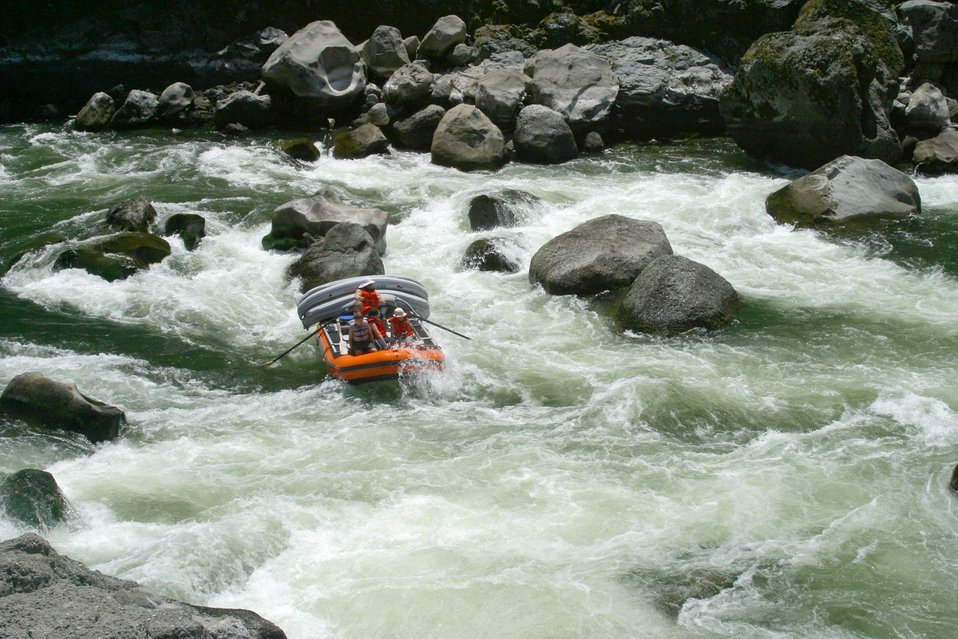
Blossom Rapids.